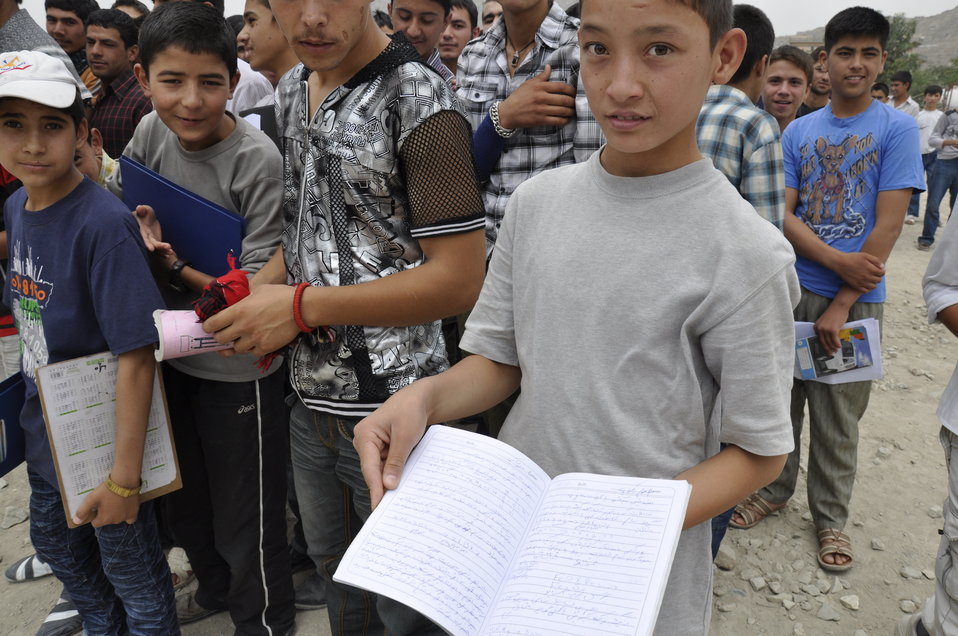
Ghazni High School in Kabul